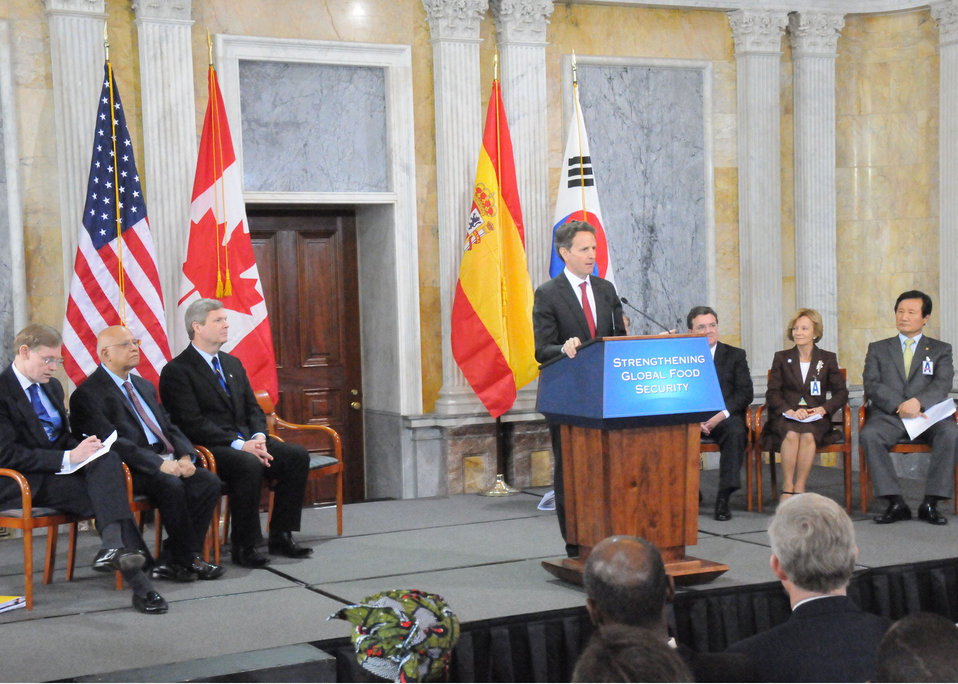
Treasury Secretary Tim Geithner makes remarks at the Strengthening Global Food Security conference held at the Treasury Department in Washington, D. C., on Thursday, April 22, 2010. (Sitting L to R behind Secretary Geithner are World Bank President Robert Zoellick, Bangladesh Finance Minister Abdul Muhith, Agriculture Secretary Tom Vilsack, Canadian Finance Minister James Flaherty, , Spanish Second Vice President and Minister of Finance Elena Salgado, and South Korean Finance Minister Yoon Jeung-Hyun) USDA photo 10di1325-70